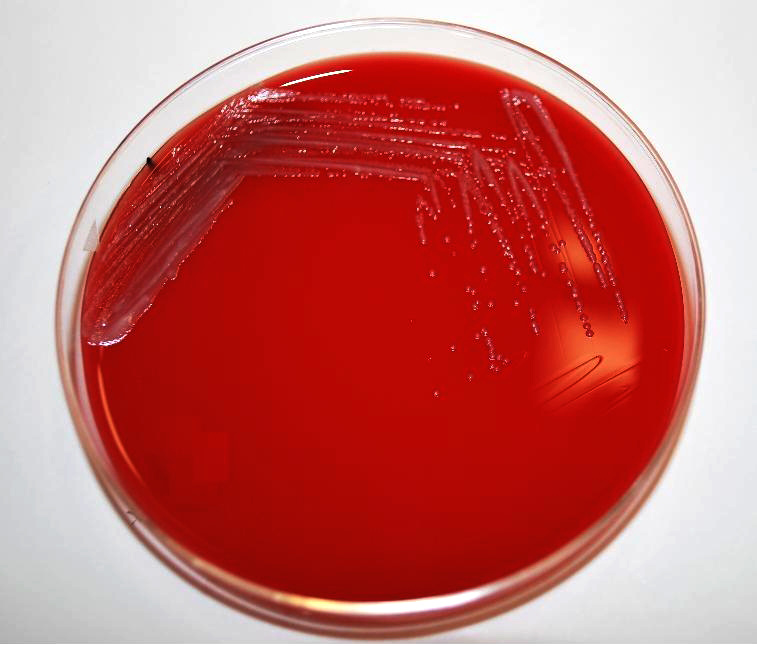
This image depicts a Petri dish containing a sheep's blood agar (SBA) medium, which had been inoculated with Gram-negative Yersinia pestis bacteria. Y. pestis is the pathogen responsible for causing human plague. This was the appearance of the colonial growth after 48 hours of incubation at 25� C.